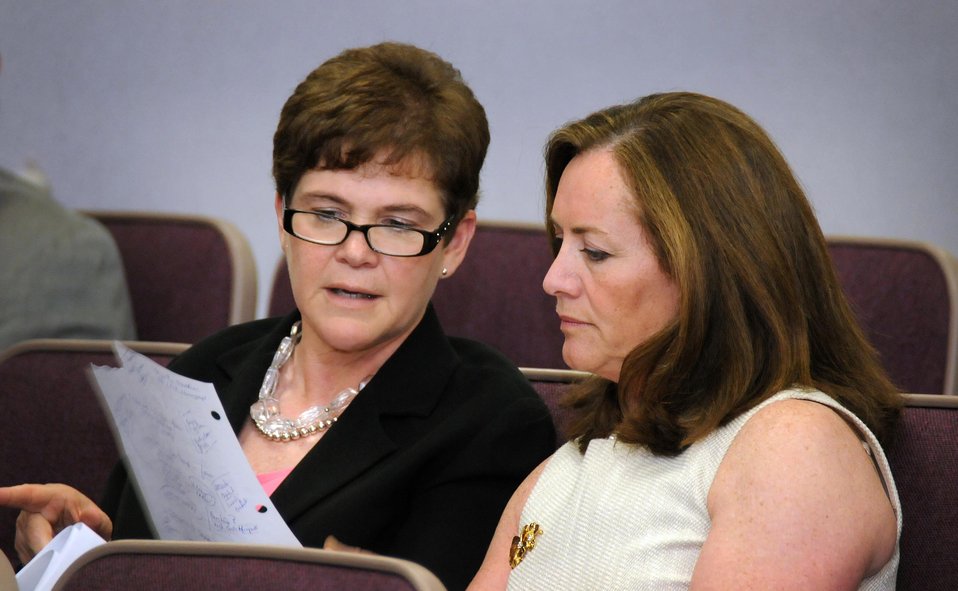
Agriculture Deputy Secretary Krysta Harden confers with Virginia First Lady Dorothy McAuliffe during a meeting with stakeholders, government and regional leaders to identify initiatives for working families and businesses in rural areas at the White House Summit on Working Families in Petersburg, VA on Wednesday, Jun. 11, 2014. This forum is part of a series of regionally hosted conversations leading up to the Jun. 23, 2014, White House Summit on Working Families.